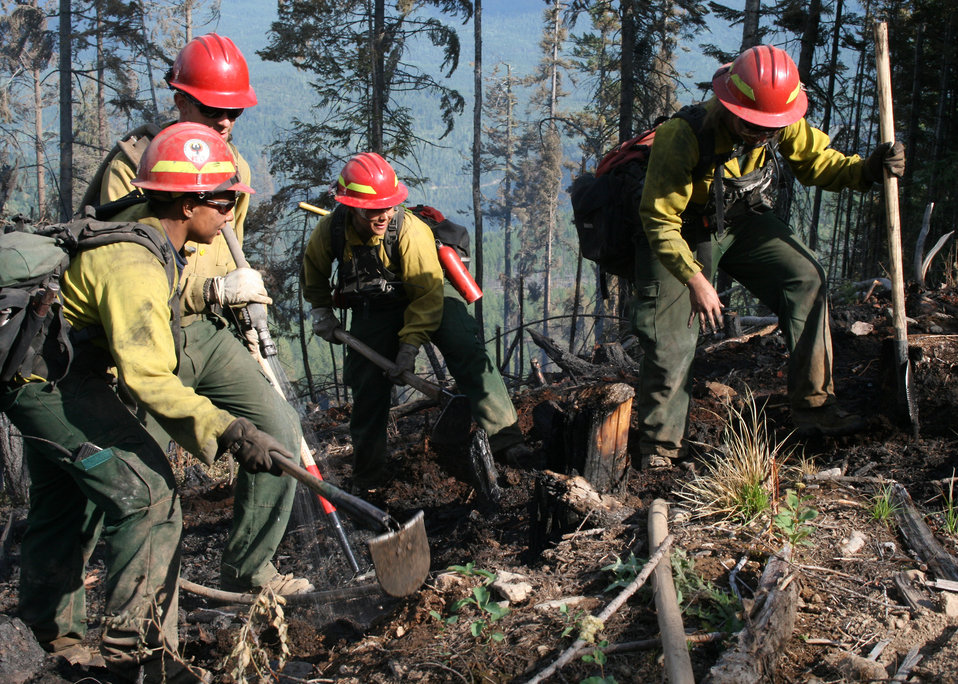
Firefighters supported by three fire engines, two helicopters, two water tenders, a dozer and an air tanker battled to contain the 90 acre Rogers Fire located on Mt. Rogers five miles west of Aladdin, WA on the Colville National Forest. Firefighters worked under adverse conditions with steep terrain and gusting winds to reduce the loss of timber and protect the Rogers Mountain Trail. The Rogers Fire began on Aug. 9, 2011 and was controlled by Aug. 19, 2011 with mop up crews ensuring that no flare-ups occurred. Colville National Forest has 1.1 million acres in northeastern Washington and includes the Kettle River, Selkirk Mountain ranges, and the upper reaches of the Columbia River.